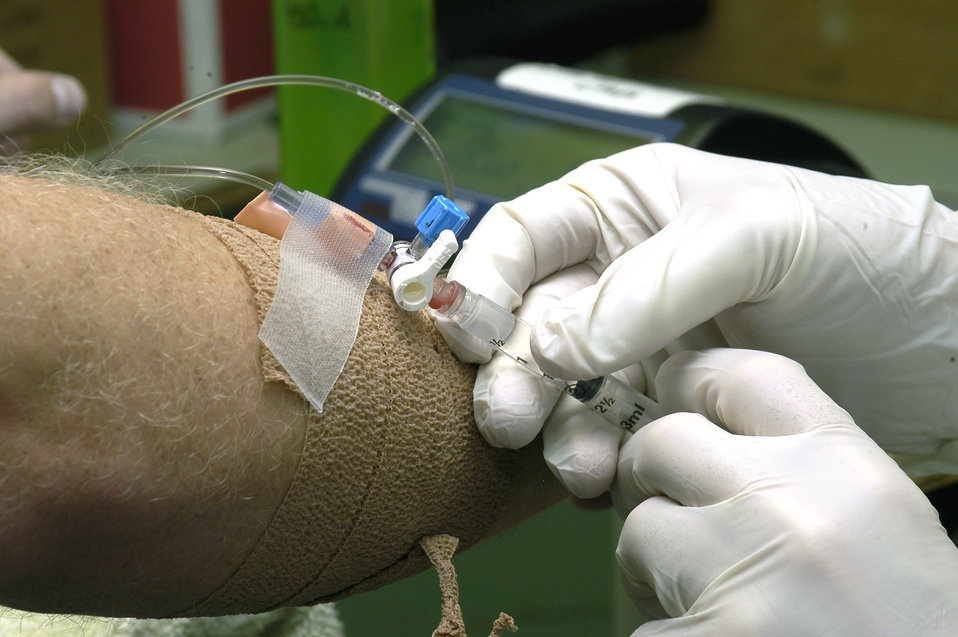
Testing the reaction

PIKES PEAK, Colo. -- Staff Sgt. Matt Bowen has blood drawn from a catheter during his first stationary-bike endurance ride as part of an altitude research study here. Sergeant Bowen is one of 18 Airmen living on the summit of Pikes Peak this summer to gauge how the body reacts to living and exercising in a high-alpine environment.